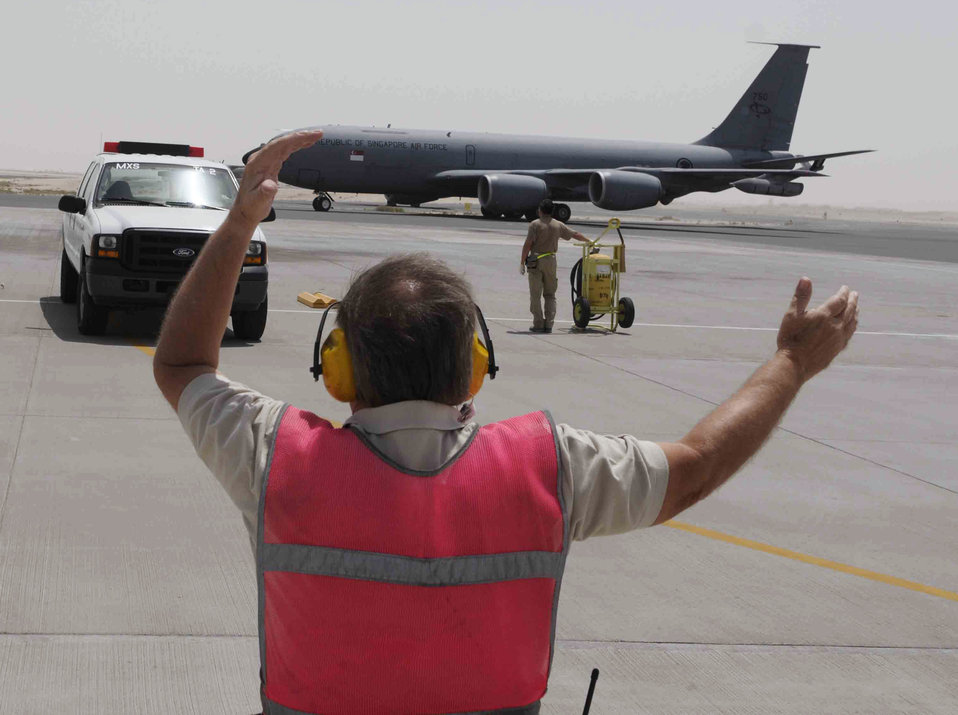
Singapore aircraft signals strong coalition relationship

Tom O'Toole performs aircraft recovery for a Singapore air force KC-135 April 16 at a Southwest Asian air base. This is the Singapore air force's 112th Squadron's fifth deployment rotation since 2004. As coalition partners, they integrate with tanker operations in the 379th Air Expeditionary Wing, which account for more than half of the refueling support provided throughout the region. Mr. O'Toole is a 379th Expeditionary Maintenance Squadron transportation and alert specialist.